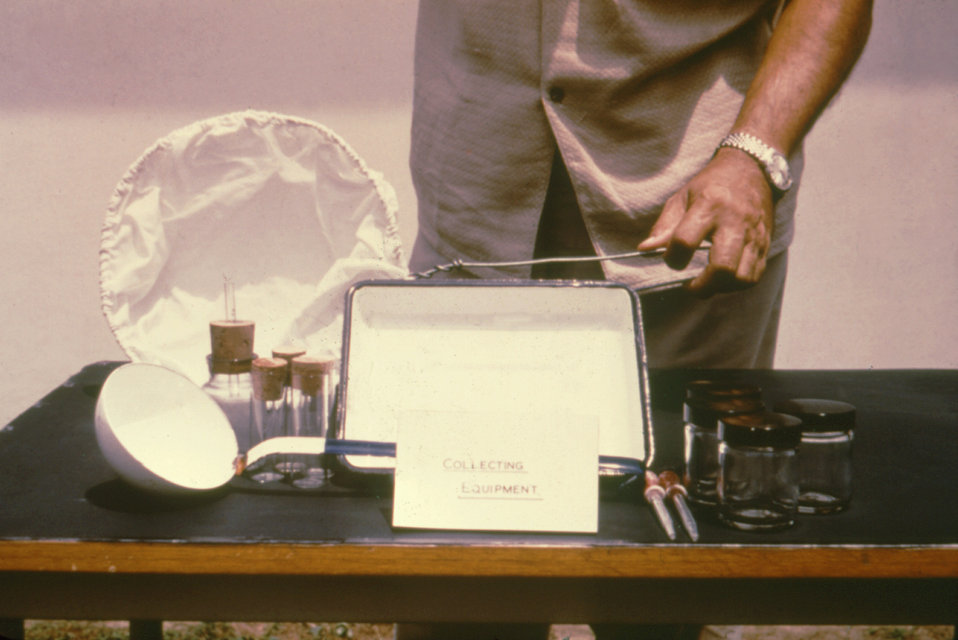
Here a laboratorian is presenting the steps necessary in mounting mosquito larvae for analysis.